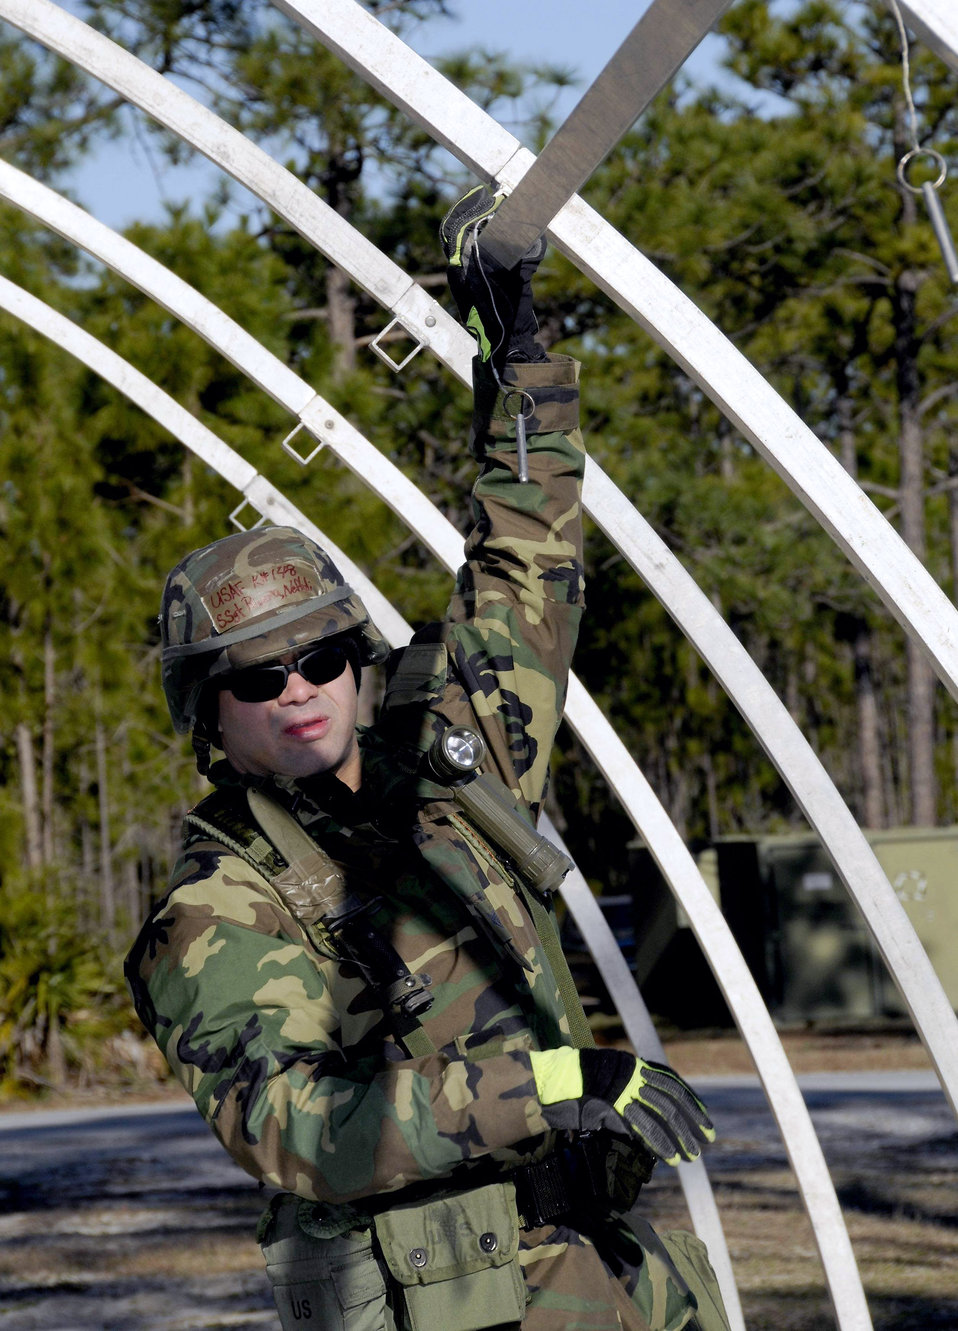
Silver Flag

Staff Sgt. Neftali Rivera erects a tent during a Silver Flag exercise Feb. 5. Silver Flag exercise is a training exercise conducted at Tyndall Air Force Base, Fla., to train military personnel within their prespective career field. Sergeant Rivera is a firefighter from the 104th Fighter Wing Massachusetts Air National Guard.